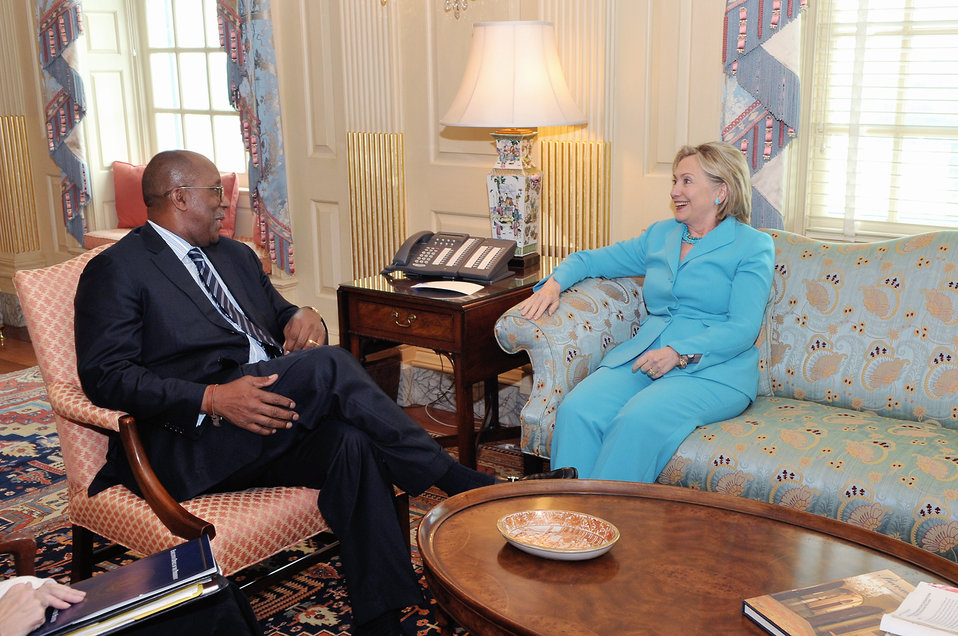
Secretary Clinton Meets With U.S. Trade Representative Ron Kirk

U.S. Secretary of State Hillary Rodham Clinton meets with U.S. Trade Representative Ron Kirk at the U.S. Department of State in Washington, D.C., on July 13, 2010.